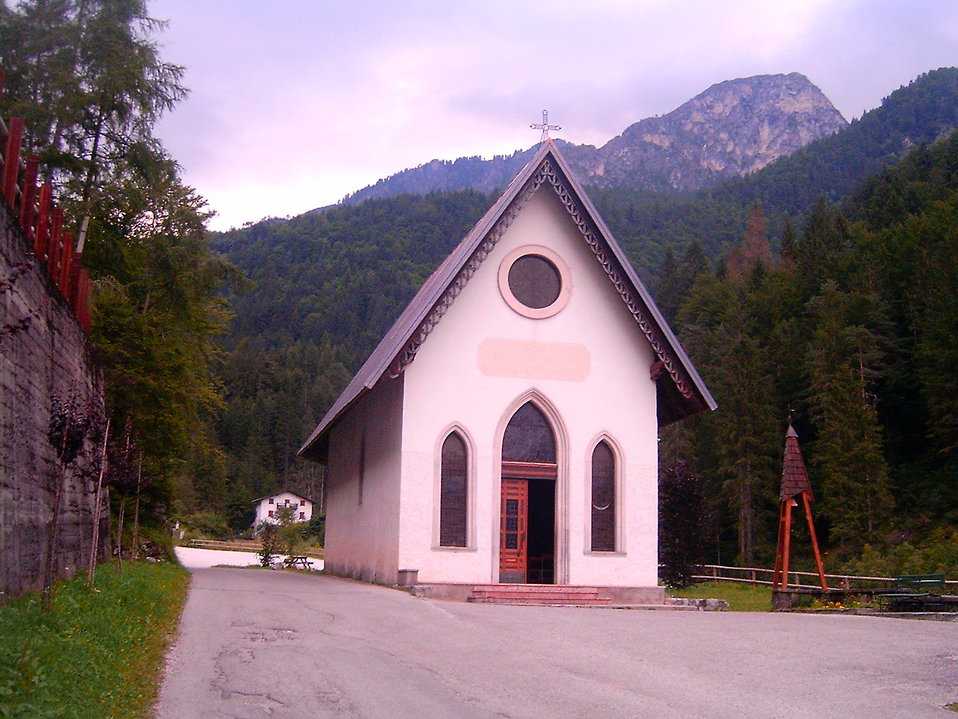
Calalzocaravaggio